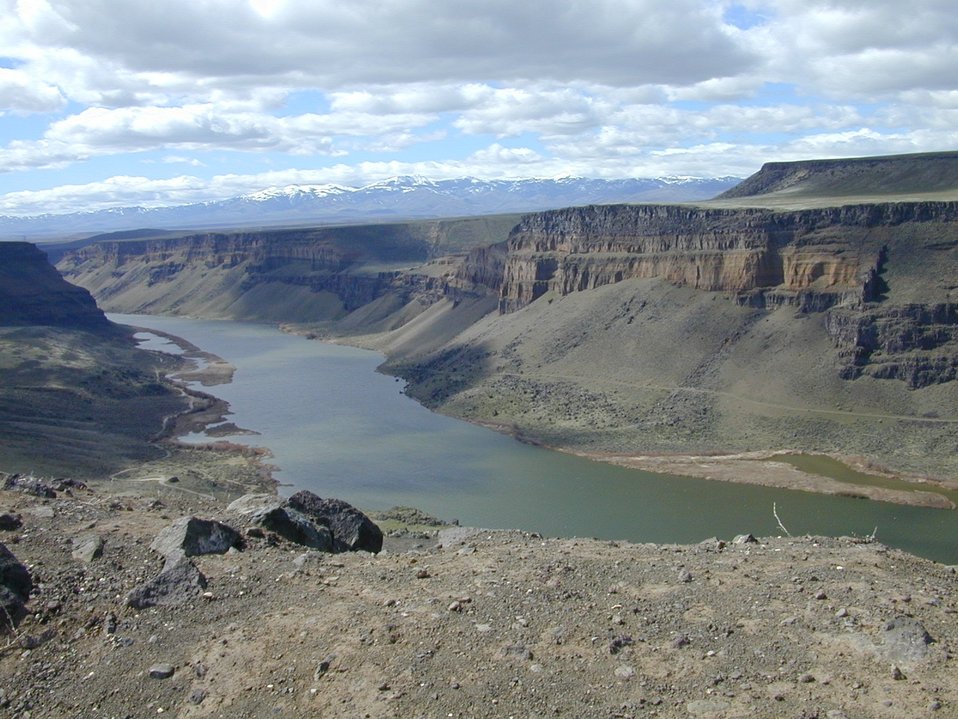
Scenic Snake River Birds of Prey National Conservation Area Lower Snake River District LSRD Snake River Canyon